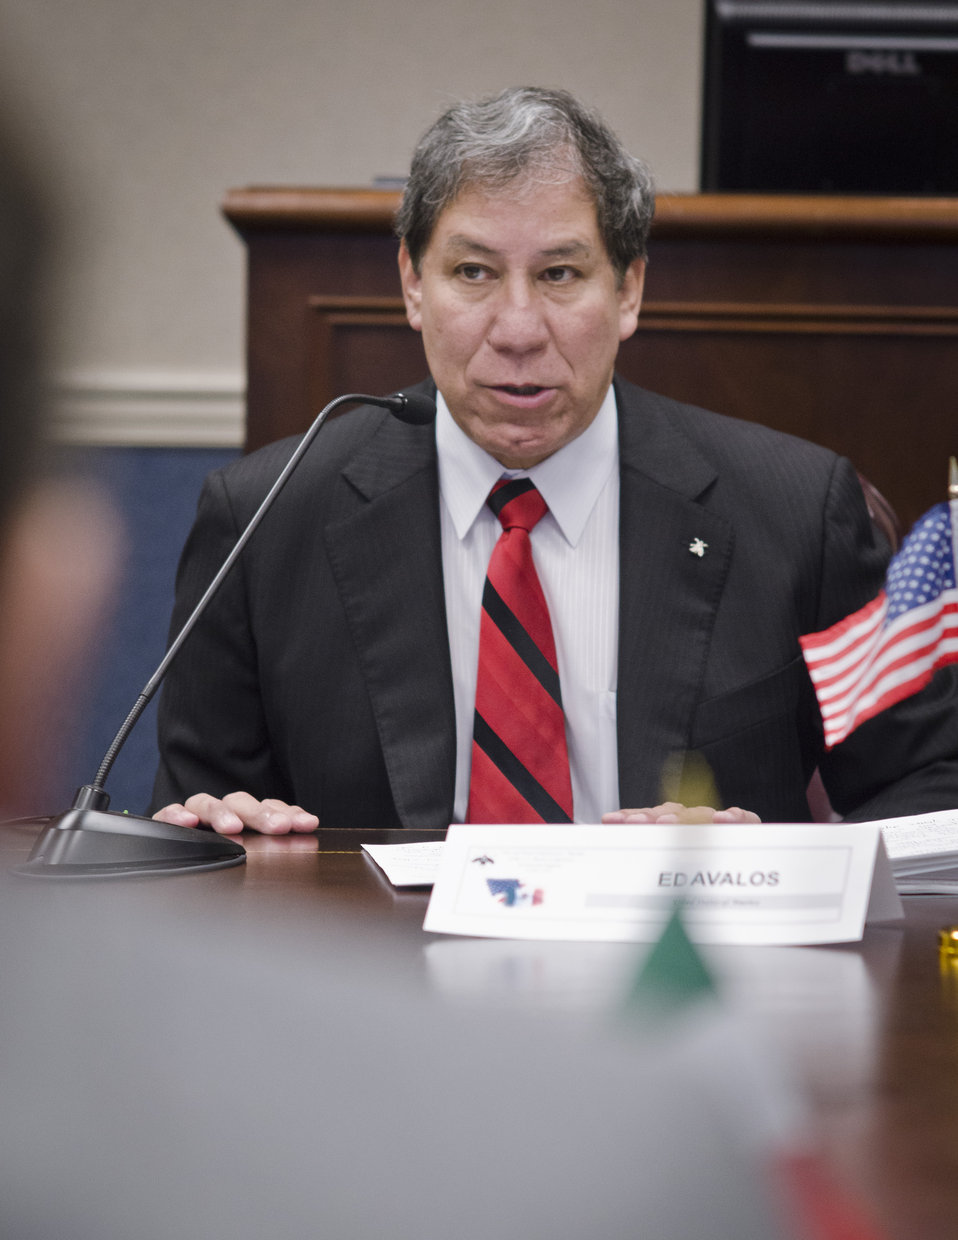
Agriculture Under Secretary Marketing and Regulatory Programs (MRP) Ed Avalos speaks at the U.S. Department of Agriculture’s (USDA) 73rd and Final Commissioners Meeting of the U.S. – Mexico Cooperative Screwworm Program in the Williamsburg room at USDA in Washington, D.C. on Oct. 5, 2012.